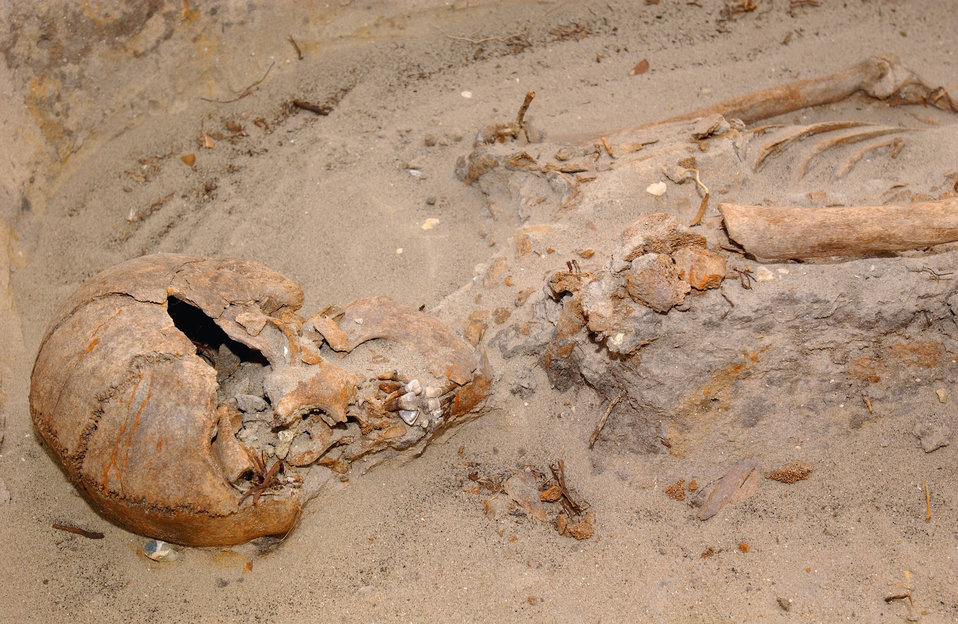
Mr. Bones

ROYAL AIR FORCE MILDENHALL, England -- Suffolk County Council Archaeologists found treasure while digging up ground for a new softball field at RAF Mildenhall, UK. This body was not only the only find that the archaeologists found, there were several other remains, pottery, and coins. The dates for most of the finds are believed to be from the early Roman age (A.D. 43 - 410), but some items could fall into the Neolithic period- roughly 3500-2000 B.C. and still others into the Bronze (2000-700 B.C.) and Iron (700 B.C.- A.D. 43) Ages.